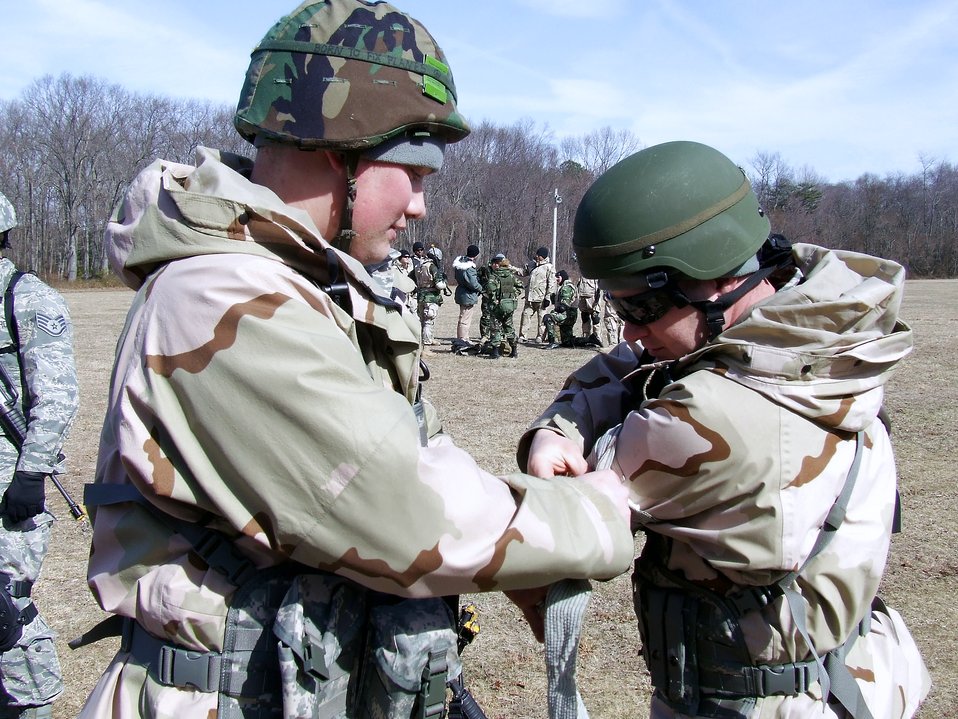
Airmen complete first Air Advisor Course

Staff Sgt. Johnathon Ocker and Master Sgt. Daniel Blow participate in the combat first aid obstacle course Feb. 29 on a range on Fort Dix, N.J. Taught by Expeditionary Operations School officials, Air Force Expeditionary Center's Air Advisor Course 08-1 prepares Airmen deploying to Afghanistan and Iraq who will in turn be training military forces in those countries. Both Sergeants Ocker and Blow are from Minot Air Force Base, N.D.